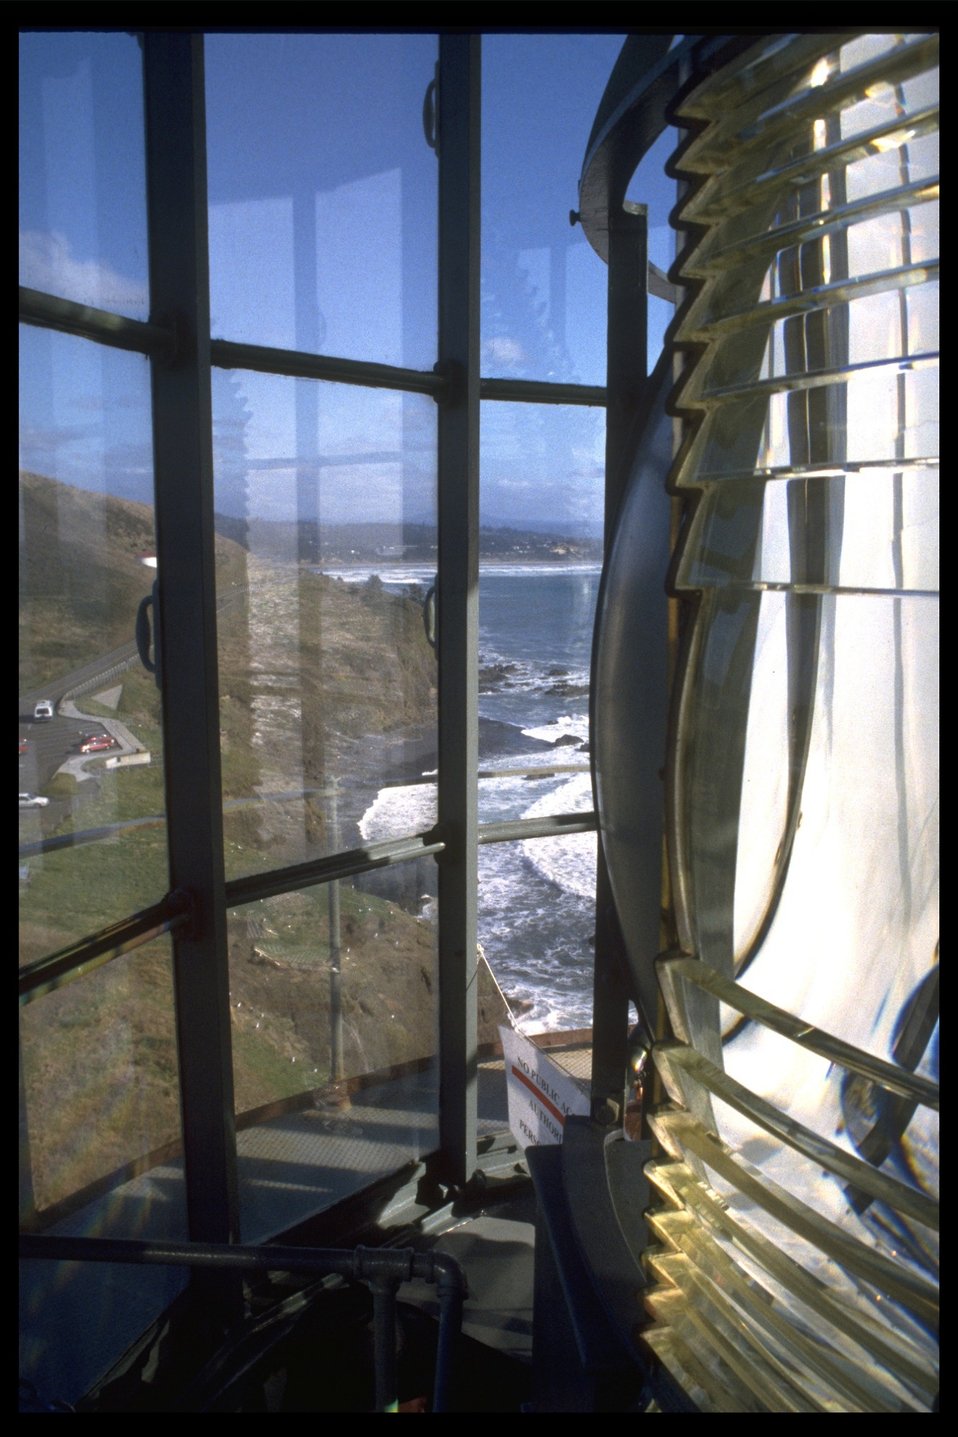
View from Yaquina Head Lighthouse lens area.